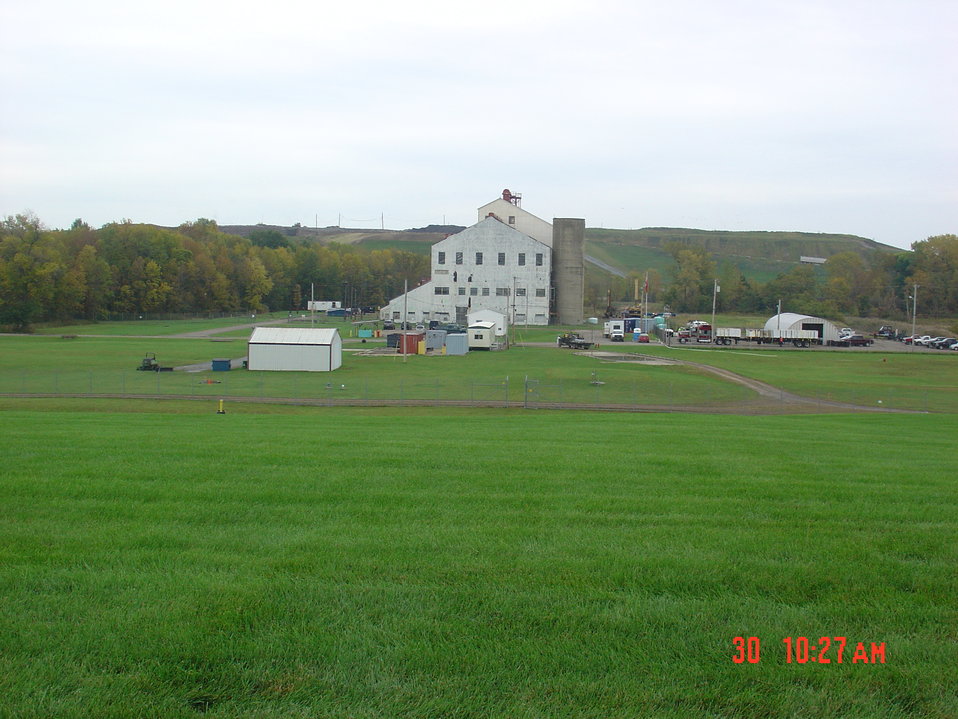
BLDG 401 SITE PICTURE

Activities from the Niagara Falls Storage Site, which is associated with the former Lake Ontario Ordnance Works. Formerly Utilized Sites Remedial Action Program (FUSRAP), a program initiated in 1974 to identify, investigate and clean up or control sites that were part of the Nation's early atomic energy and weapons program. Activities at the sites that are eligible for FUSRAP were conducted by Manhattan Engineer District (MED) or the Atomic Energy Commission (AEC), both predecessors of the Department of Energy (DOE). The U.S. Army Corps of Engineers was assigned management of FUSRAP by Congress in 1997.